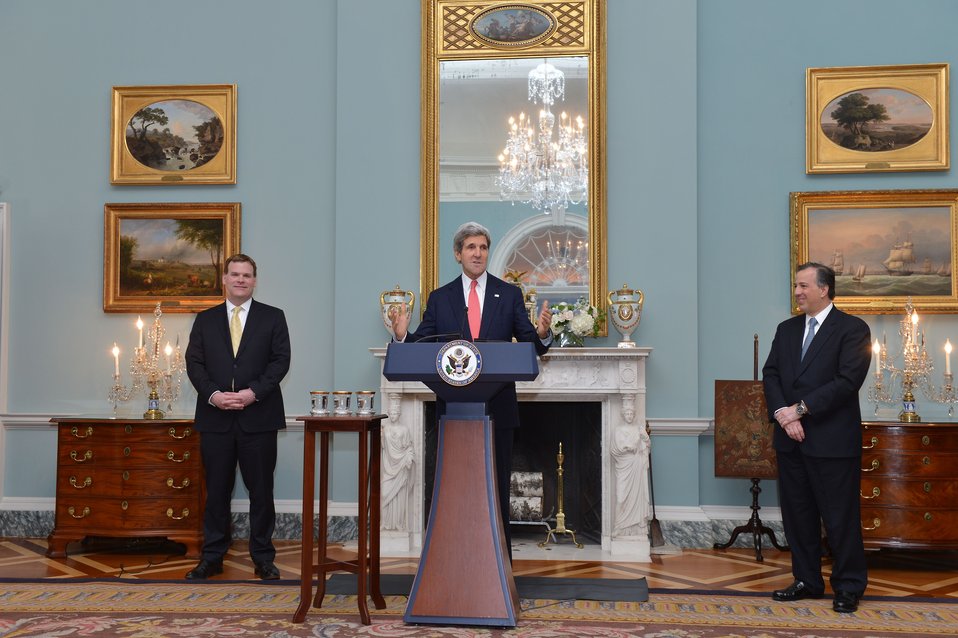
Secretary Kerry Speaks at the North American Trilateral Ministerial

Flanked by Canadian Foreign Minister John Baird, left, and Mexican Foreign Secretary Jose Antonio Meade, right, U.S. Secretary of State John Kerry delivers remarks during the North American Trilateral Ministerial at the U.S. Department of State in Washington, D.C., on January 17, 2014.